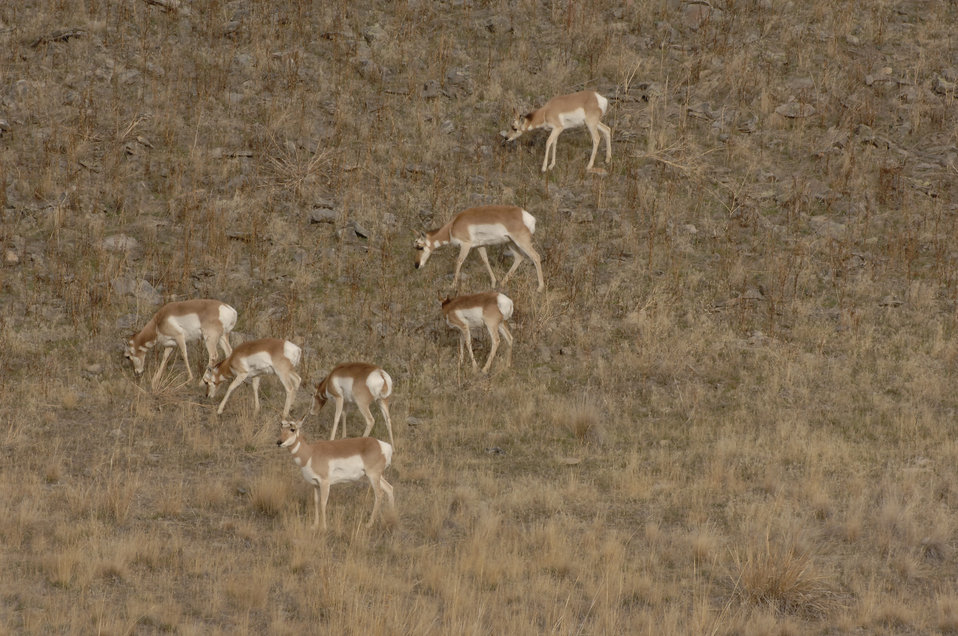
Pronghorn antelope graze in the National Bison Range Wildlife Refuge in Montana on November 17, 2007. The U.S. Fish and Wildlife Service administers this refuge as part of the National Wildlife Refuge System. The refuge was established in 1908 and is one of the oldest Wildlife Refuges in the nation and was established to support a population of American bison. There are approximately 350-500 American bison. Other large wildlife found on the Range includes elk, whitetail and mule deer, pronghorn antelope, bighorn sheep and black bear.